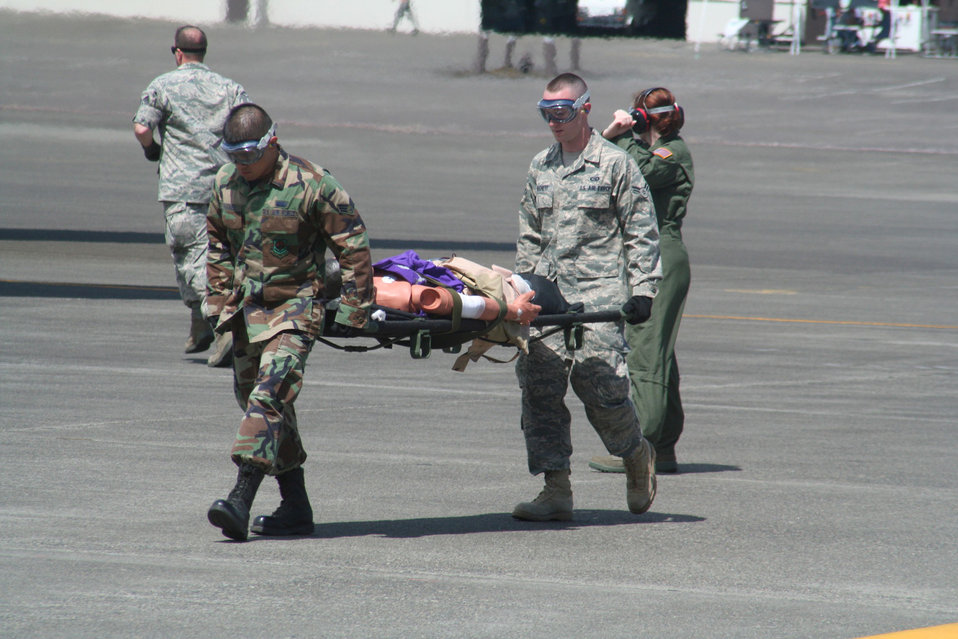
Guard members bring unique skills to war effort

Teams compete in the aeromedical evacuation events for Air Mobility Rodeo 2009 July 20 at McChord Air Force Base, Wash. More than 100 teams are participating in RODEO competition, including teams from seven foreign countries. RODEO is the Air Force's and AMC's premier air mobility competition. It's an international combat skills and flying operations competition designed to develop and improve techniques, procedures and interoperability with international partners to optimize mobility partnerships and enhance mobility operations.